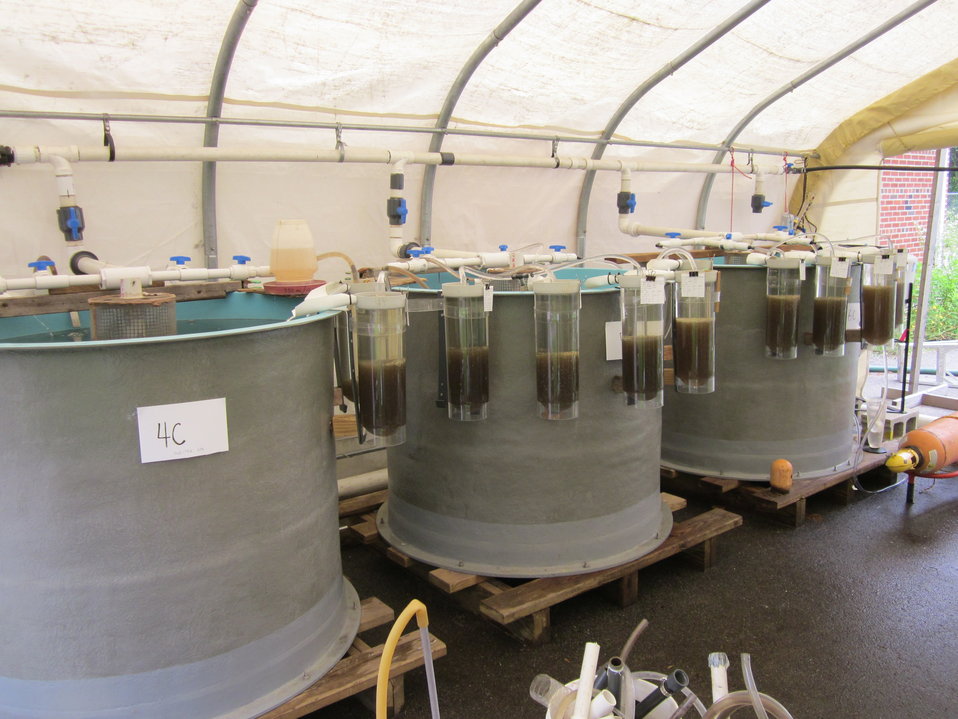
American shad rearing facility

North Attleboro, MA, June 2012: Tanks at North Attleboro National Fish Hatchery in Massacusetts collect recently hatched American shad.

Fish biologists capture adult shad from the Merrimack and Connecticut Rivers and transport them to the hatchery where tank spawning occurs. The fertilized eggs flow through a drain to a control box where they are collected and placed into egg cylinders hung around tanks. When the shad larvae hatch in about 4 days, they swim into the tanks through chutes at the top of the cylinders. The larvae are marked with oxytetracycline and released after a few days, for a turnaround time of about a week from egg to release in the Merrimack and Charles Rivers.

In 2012, the hatchery quadrupled past production for a projected total of 7-8 million shad.